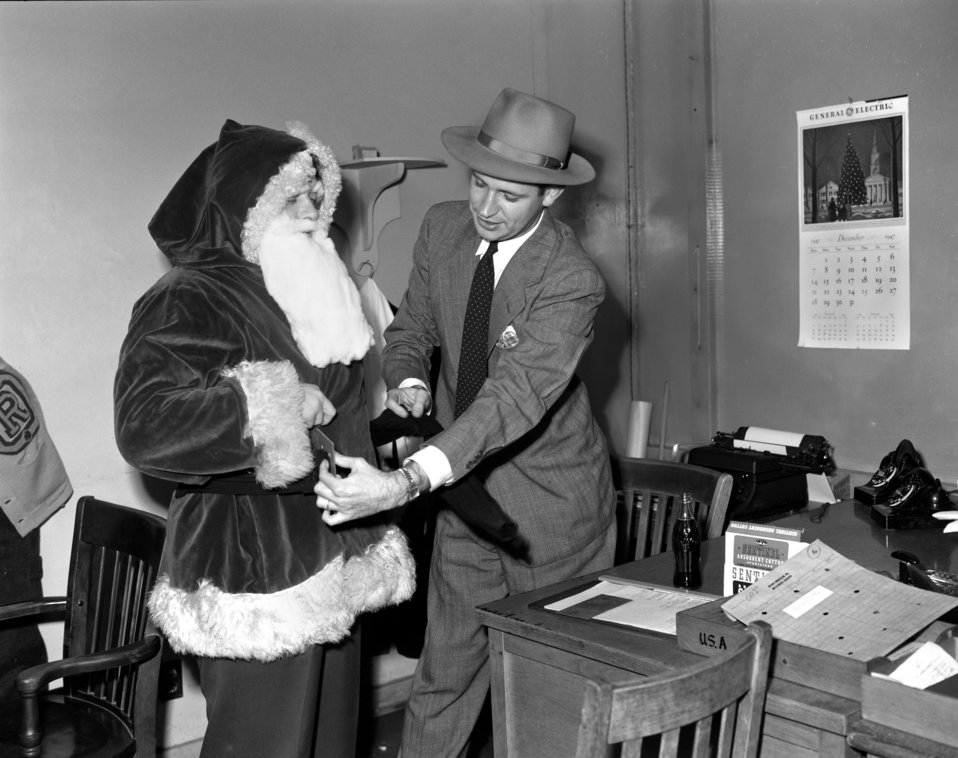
Santa Claus Oak Ridge 1947

4080-e DOE photo Ed Westcott 12-11-1947 Ed Morgan as Santa Claus Oak Ridge Tennessee